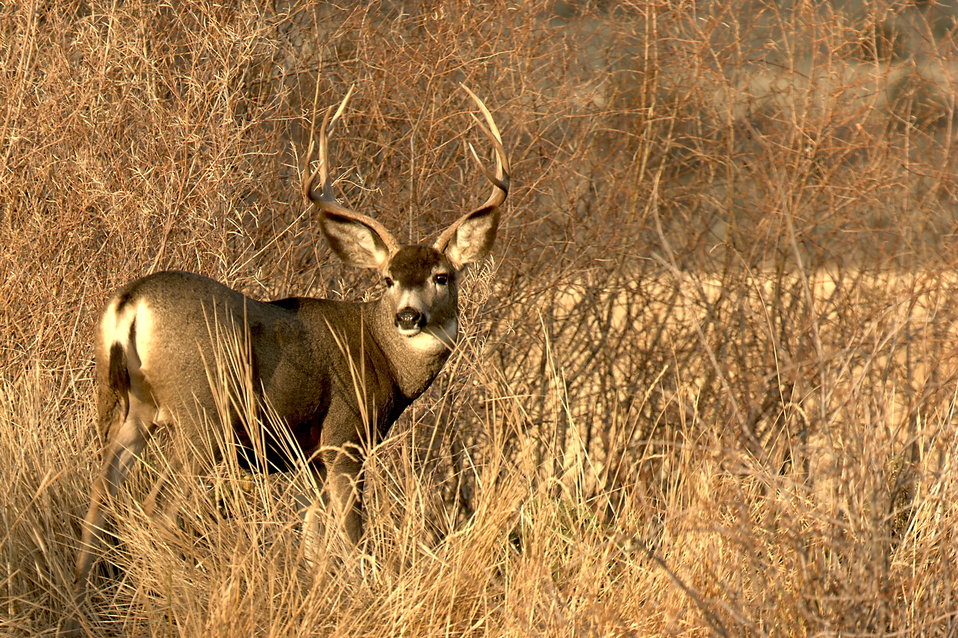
Mule deer buck at Malheur Refuge

A mule deer buck displays an impressive rack at Malheur National Wildlife Refuge in Oregon. Mule deer bucks are a common sight on the refuge during late summer and fall. Bucks with large antlers are a big draw for visitors and photographers in the fall.